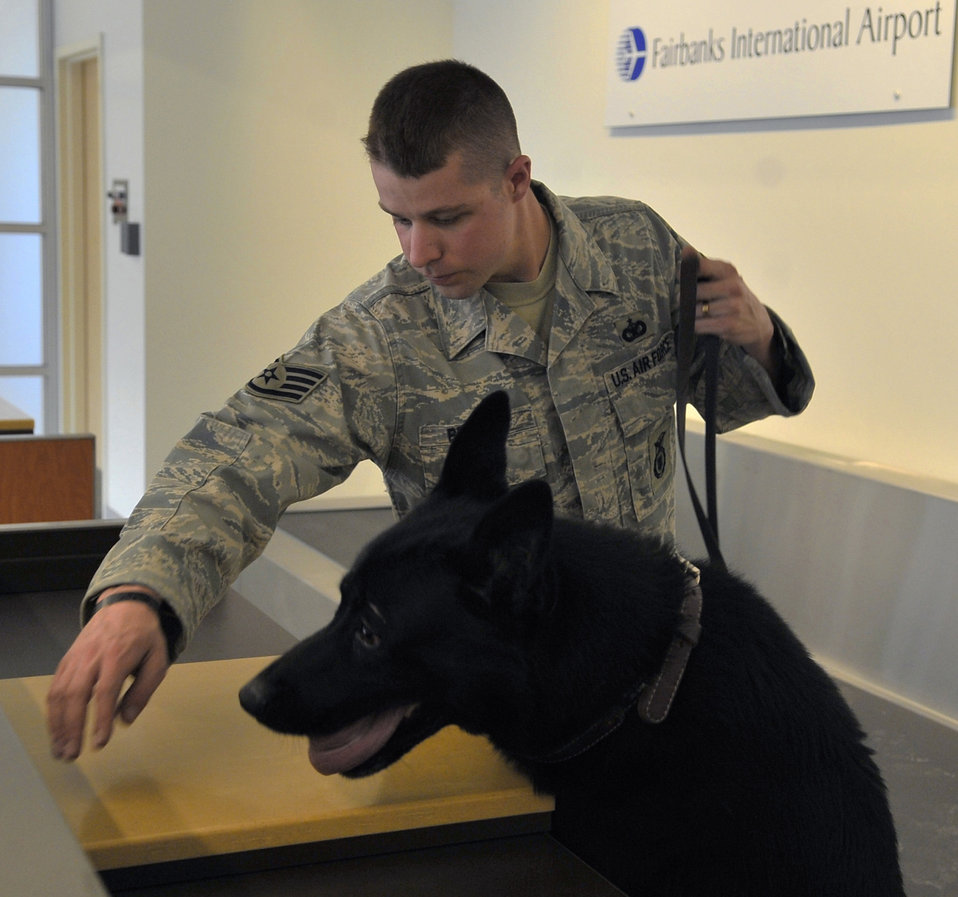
Working dog, EOD team partner to secure Alaska's interior

Staff Sgt. Robert Brown and military working dog Benny search a desk for explosives during a sweep of the new wing at the Fairbanks International Airport in Fairbanks, Alaska, May 5. The new wing was opened to the public May 7. Sergeant Brown and Benny are a MWD team assigned to the 354th Security Forces Squadron, Eielson Air Force Base, Alaska.